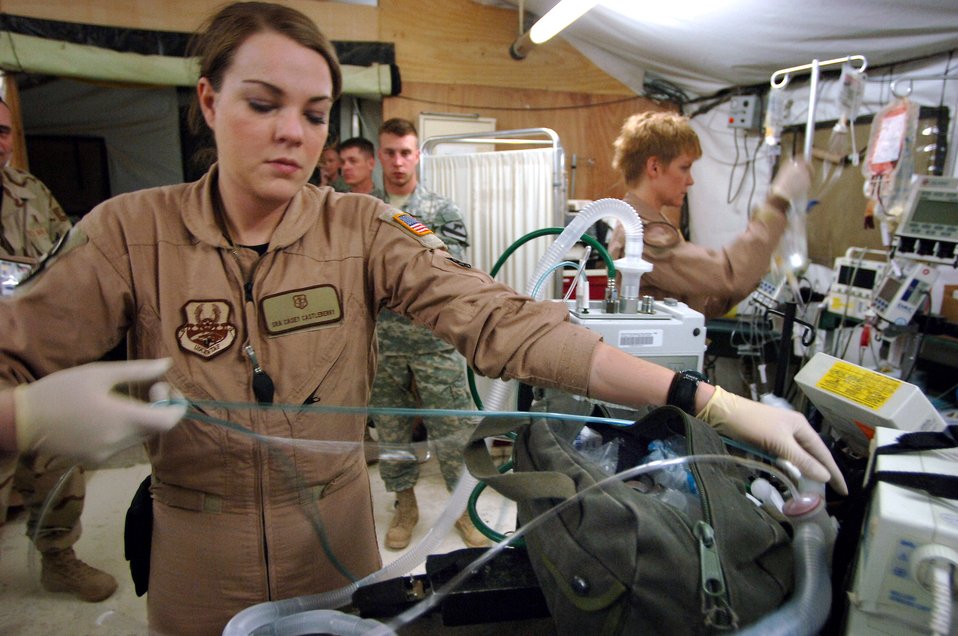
Staging facility prepares injured warfighters for flight

Senior Airman Casey Castleberry and Capt. Jacqueline Cole prepare Army Sgt. Jeremy Barnet to travel from the Air Force Theater Hospital intensive care unit to a C-17 Globemaster III departing Feb. 21 from Balad Air Base, Iraq, to Landstuhl, Germany, where he will receive further care for his wounds. Airman Castleberry and Captain Cole are assigned to the 332nd Expeditionary Operations Group.